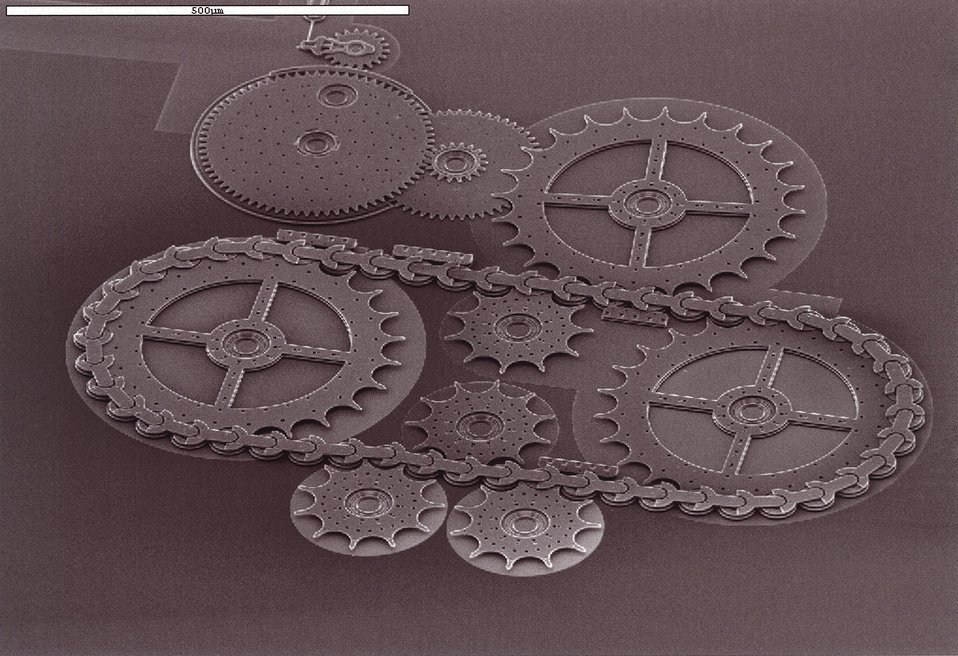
THE WORLD'S SMALLEST MICRO-CHAIN DRIVE FABRICATED AT SANDIA NATIONAL LABORATORY.

THIS SANDIA DEVELOPED SILICON MIRCO-CHAIN RESEMBLES A BICYCLE CHAIN, EXCEPT THAT EACH LINK COULD REST COMFORTABLY ON A HUMAN HAIR. MICROELECTROMECHANICAL SYSTEMS ARE BEING DEVELOPED AT SANDIA IN THE MICROELECTRONICS DEVELOPMENT LAB. THE MDL IS A WORLD CLASS FABRICATION FACILITY DEDICATED TO PROVIDING DEVELOPMENT AND ENGINEERING CAPABLITIES TO SUPPORT INDUSTRY, GOVERNMENT AND PROGRAMS OF NATIONAL INTEREST.